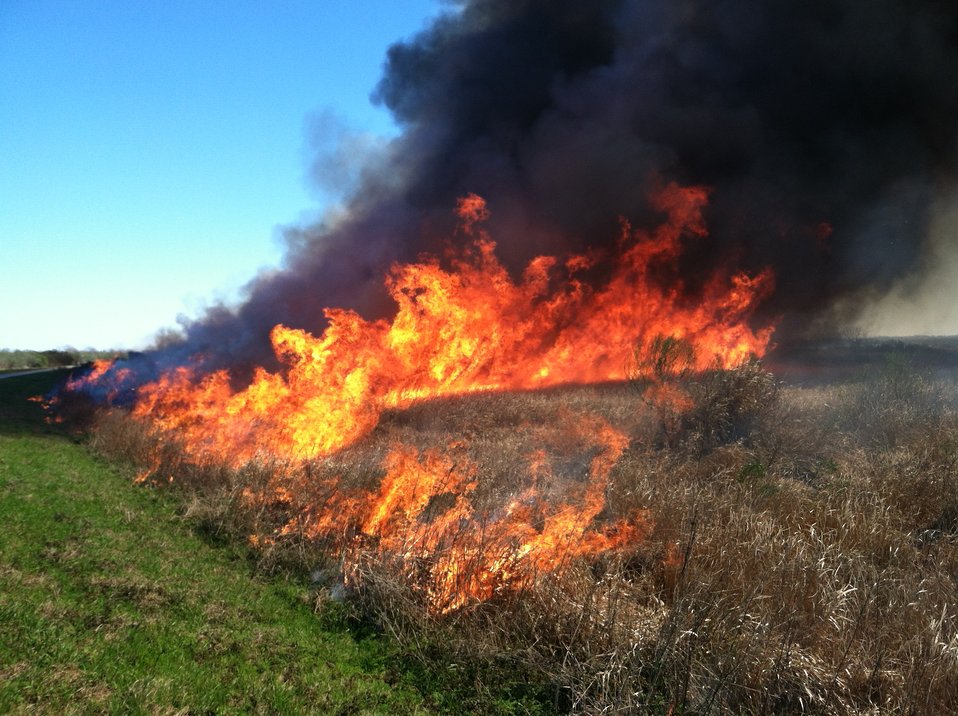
Lacassine RX 022714

Fire behavior along a fishing levee at Lacassine NWR. USFWS firefighters conducted a prescribed fire in late February 2014 to clear the fishing levees of highly flammable dead grass to reduce wildfire risk and improve fishing access.